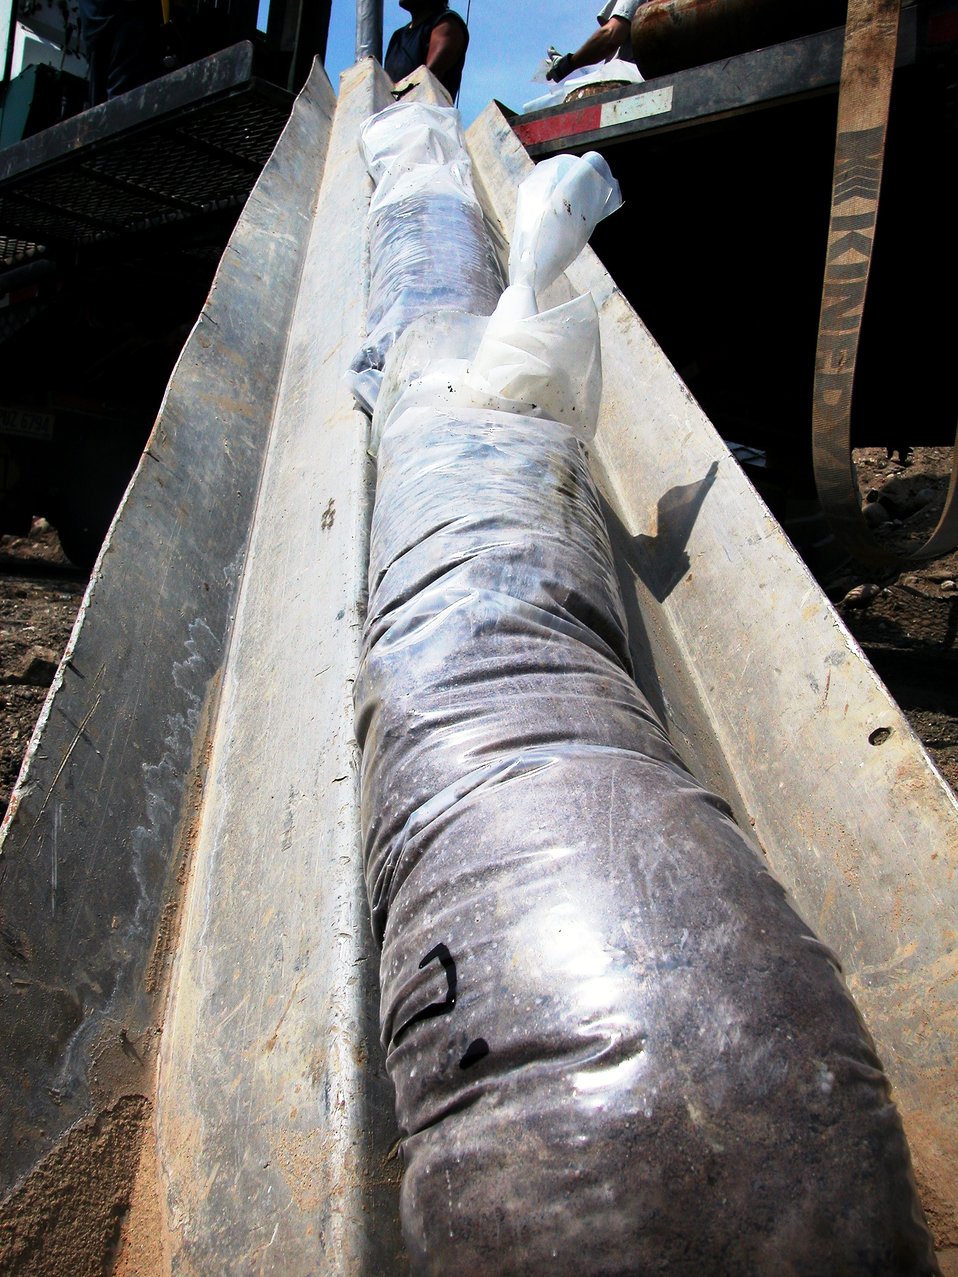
Corps drills borehole test sites at Success Dam

Contractors with the U.S. Army Corps of Engineers Sacramento District package a core sample taken during excavation of borehole test sites May 1, 2006, at Success Dam near Porterville, Calif. The core samples and boreholes are used to evaluate the earthen structure and stability of soil and rock underneath the dam during the Corps’ Success Dam Safety Modification Study.